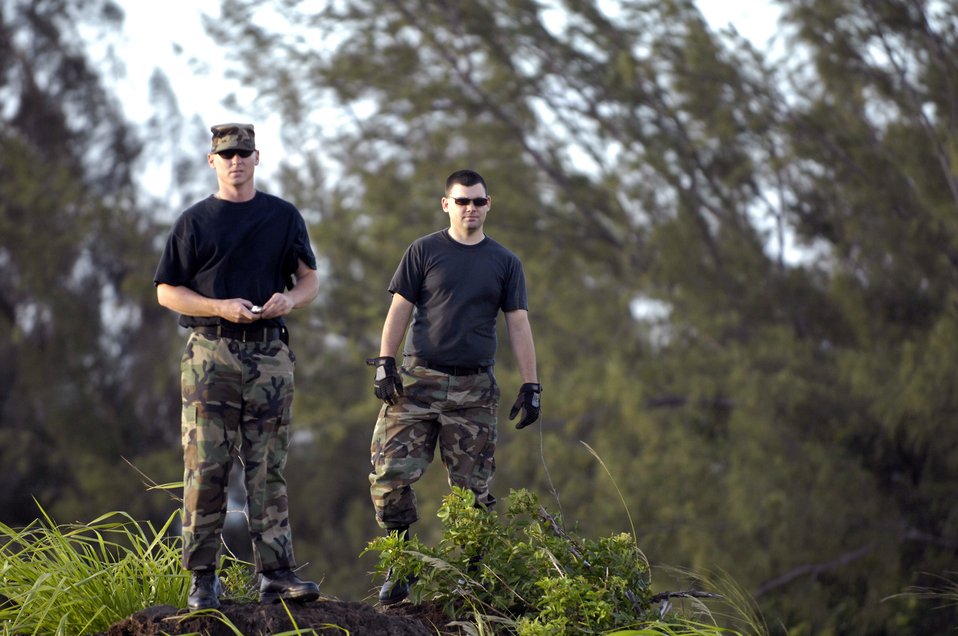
Load 'em up, drop 'em out

Staff Sgt. Robert Ward and Airman 1st Class Justin Stevens watch the 535th Airlift Squadron's C-17 Globemaster IIIs run quarterly airdrop qualifications June 11 at the Kahuku Training Range in Hawaii. The Airmen who had loaded the cargo bundles are from the 15th Logistics Readiness Squadron Combat Mobility Element and the C-17s are from Hickam Air Force Base, Hawaii.